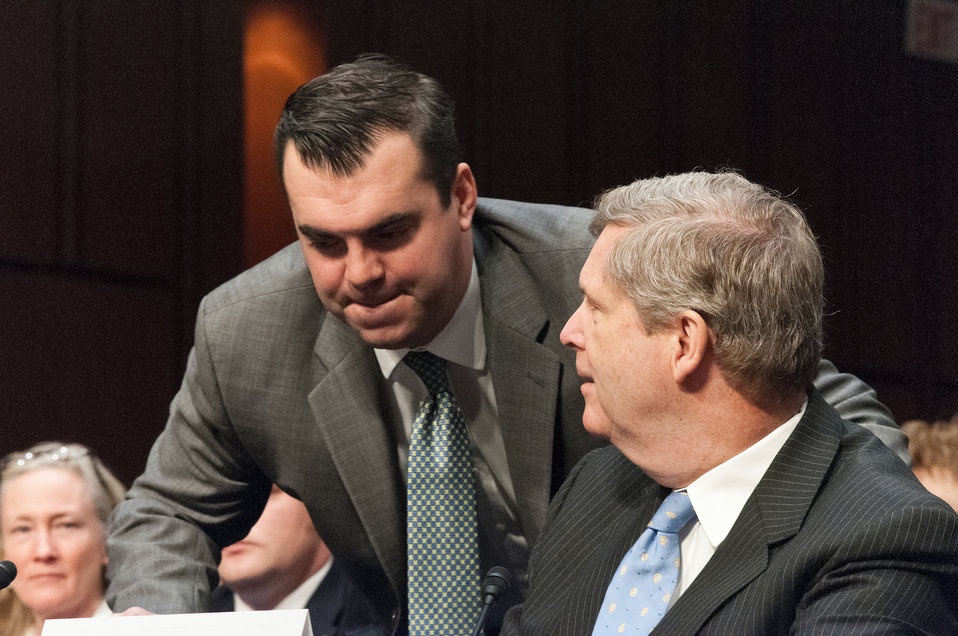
Agriculture Assistant Secretary for Congressional Relations Brian Baenig (left) and Agriculture Secretary Tom Vilsack (right) review talking points prior to Secretary Vilsack testifying on “Healthy Food Initiatives, Local Production and Nutrition” before the Senate Agriculture Committee on Wednesday, March 7, 2012 in Washington, D.C.